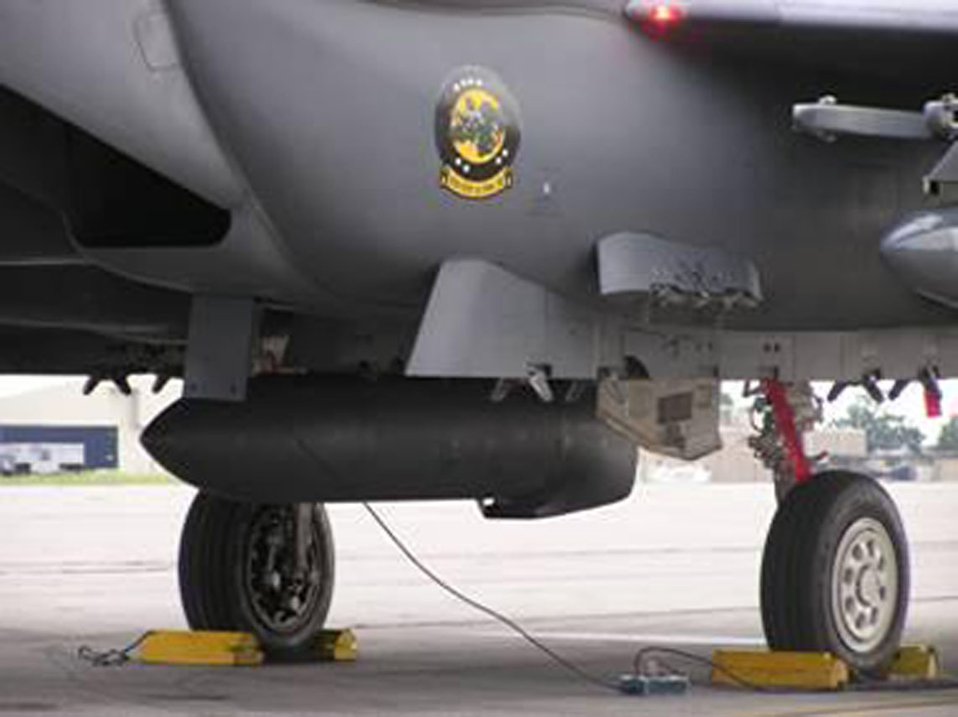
An/ASQ-236 Radar Pod

The AN/ASQ-236 Radar Pod contains synthetic aperture radar that provides detailed maps for surveillance, coordinate generation and bomb impact assessment purposes. It will be operational on the F-15E Strike Eagle aircraft.